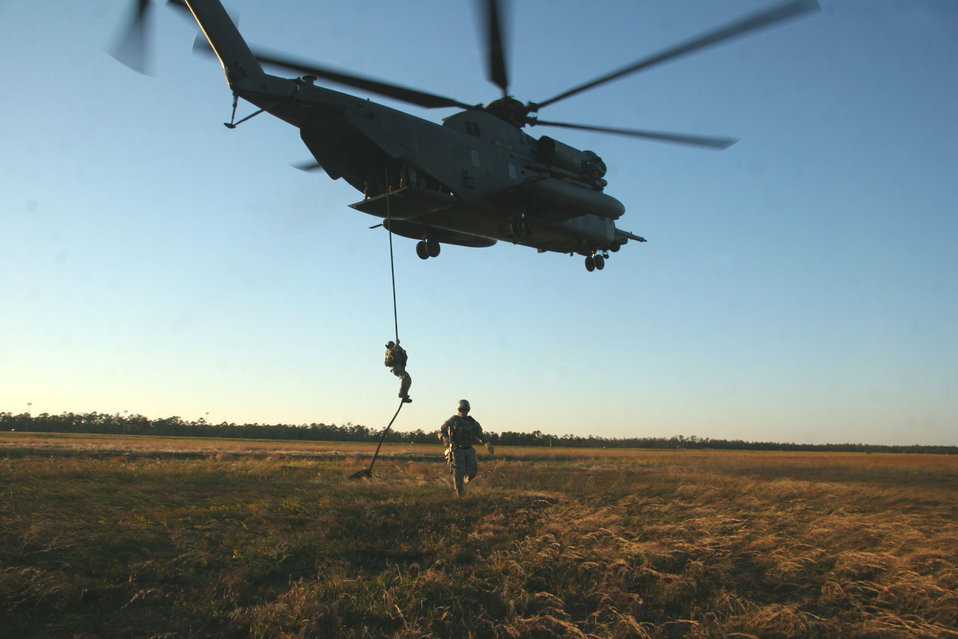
'Fast-roping' at Emerald Warrior

Green Berets practice